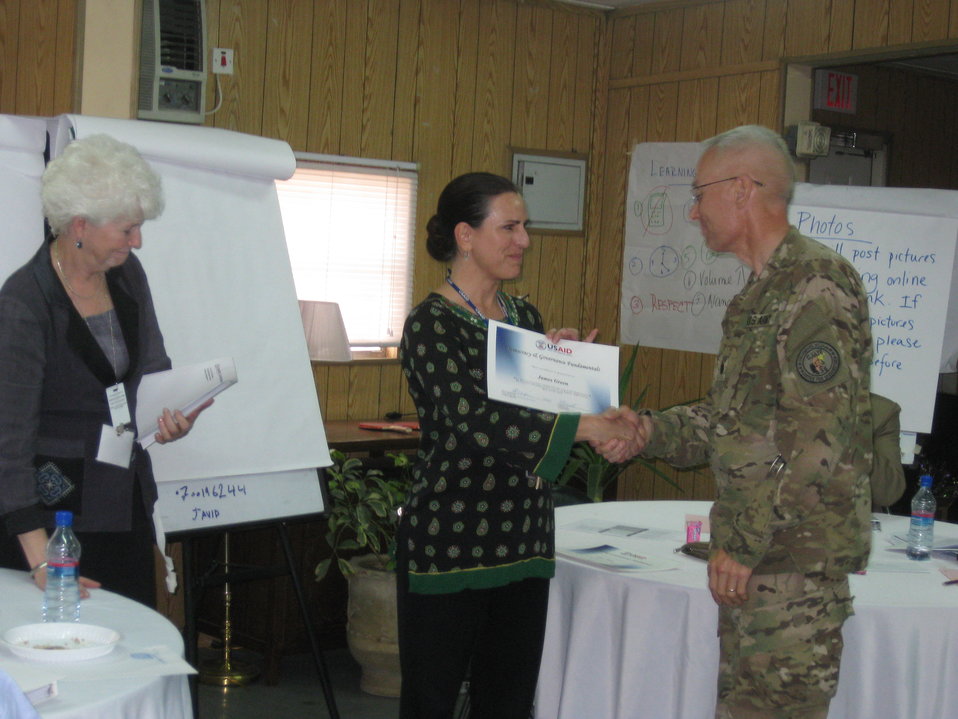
Afghan Youth Voices 065